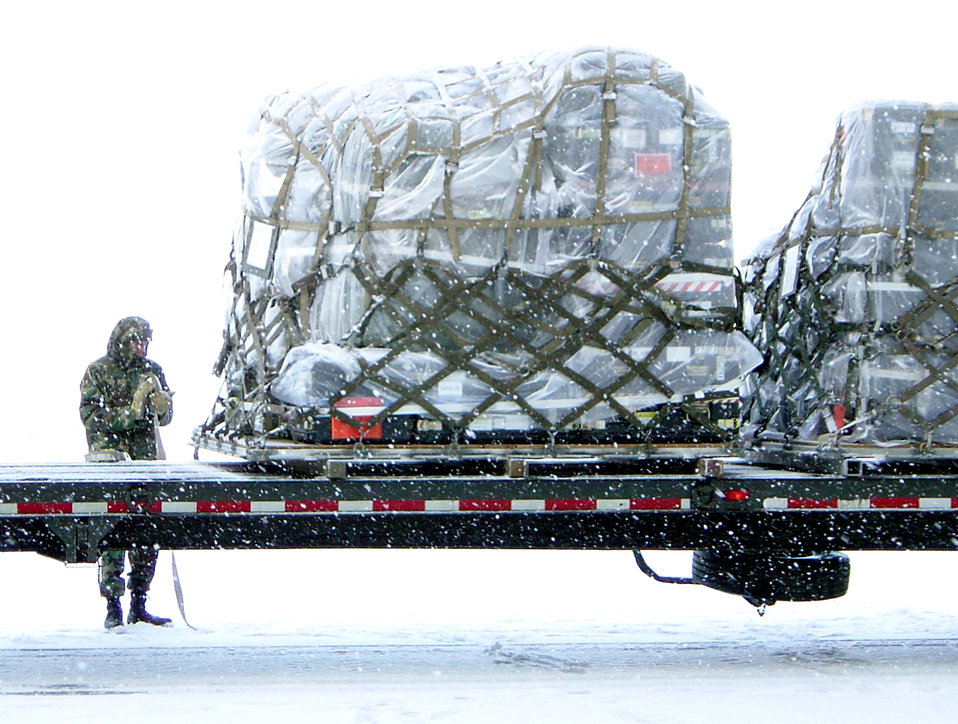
Frigid freight

MISAWA AIR BASE, Japan -- Senior Airman Daruis Justice braves blowing snow on the flightline while preparing pallets of communications equipment for shipment to areas affected by tsunamis Dec. 26. About 25 people and 70 tons of cargo from the 35th Fighter Wing here are scheduled to deploy to the region Jan. 6 to assist relief operations there. Besides the communications cargo, 35th FW officials are scheduled to ship medical equipment and three airfield crash rescue firefighting vehicles. Airman Justice is a vehicle operator and dispatcher assigned to the 35th Logistics Readiness Squadron.